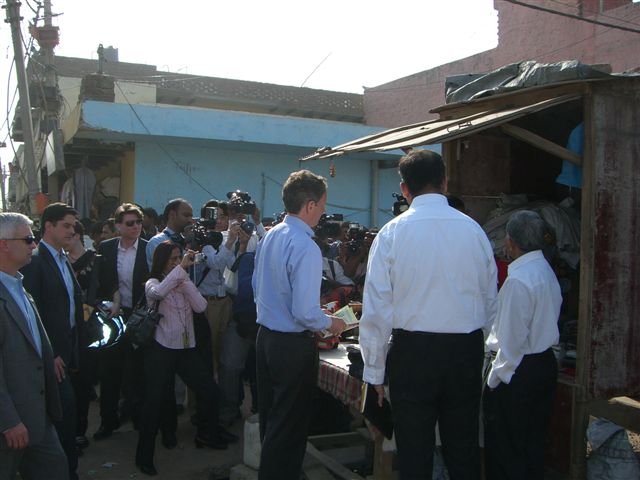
Secretary Geithner in India, 4/6/10

On April 6, 2010, Secretary Geithner visited a storefront site in India that offers mobile banking services to its customers to highlight the steps India has taken to expand financial access – a key part of achieving more balanced and inclusive economic growth.